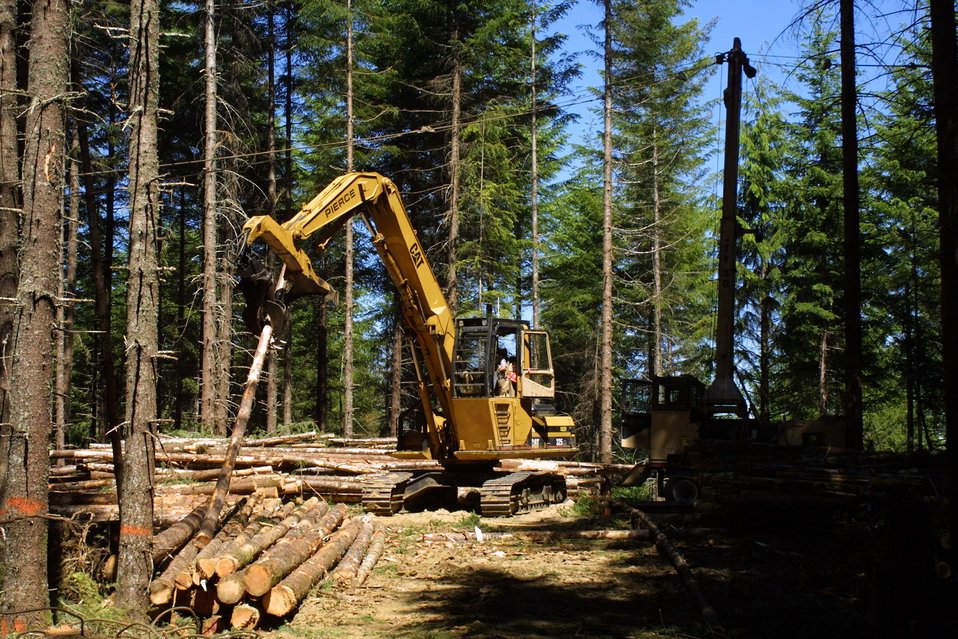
Camas East Timber Sale in Late Successional Reserve.